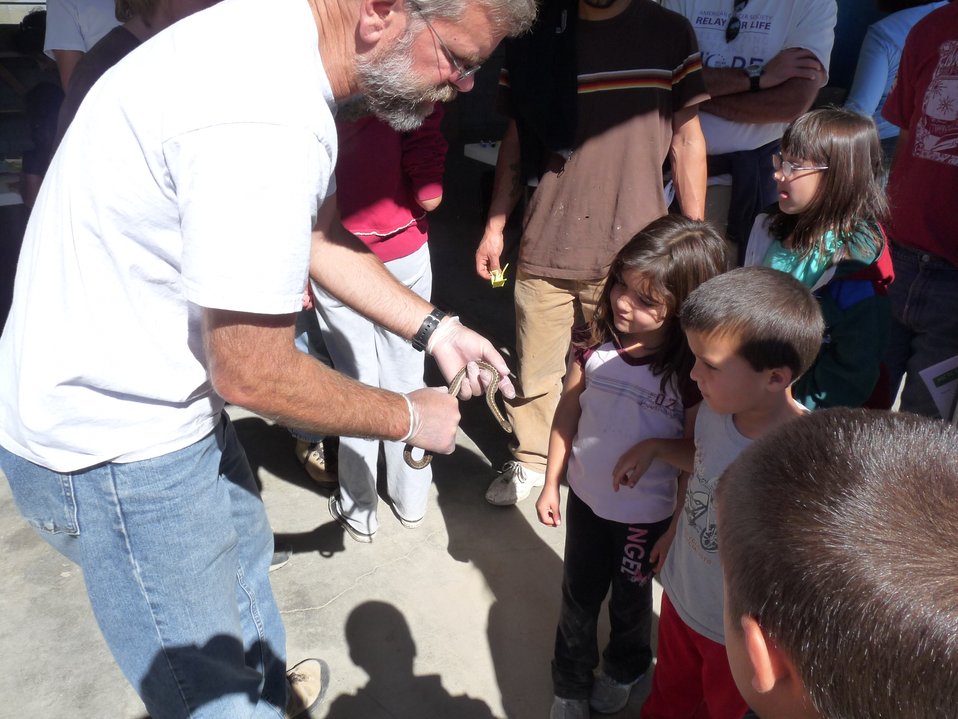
San Luis Valley National Wildlife Refuge

Each year, the San Luis Valley NWR hosts 'Kids Camp & Critters,' a kid-friendly event that teaches young people about wildlife in Colorado. The event takes place in conjunction with the Monte Vista Crane Festival.